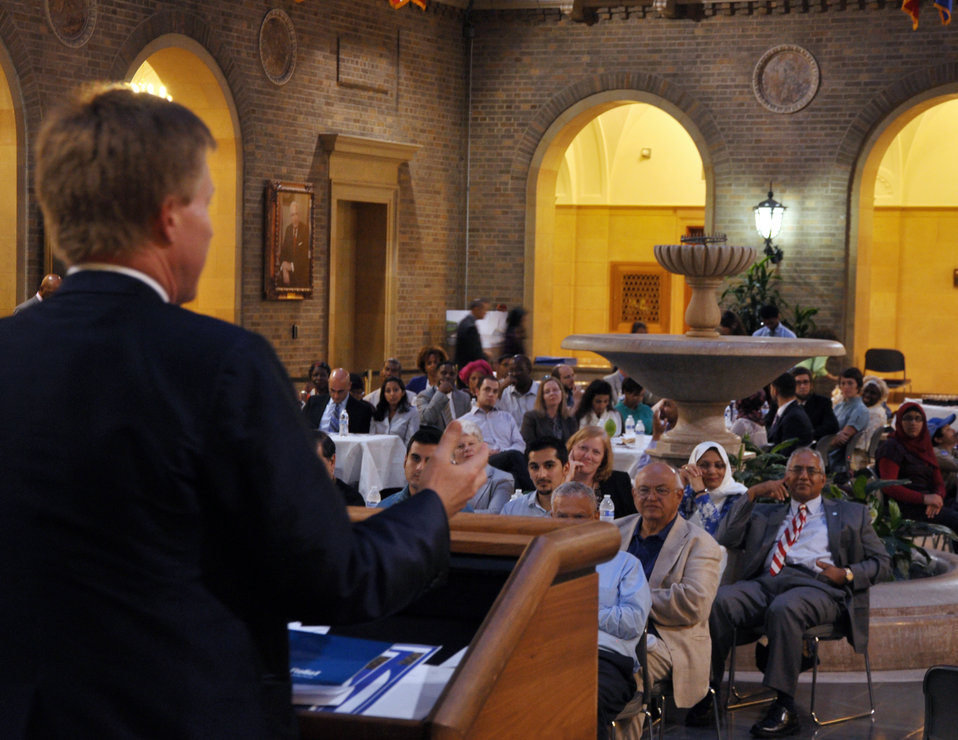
U.S. Department of Agriculture (USDA) StrikeForce Initiative Director Max Finberg emcees the USDA;s fifth annual Ramadan dinner on the USDA Whitten Building patio on Thursday, Aug. 1, 2013. For the second year in a row, Islamic Relief USA had the privilege of sponsoring the event’s dinner. Islamic Relief USA works with the USDA as well as numerous other organizations to help alleviate hunger. In one joint initiative with the USDA, IRUSA helps support community organizations across America that provide summer meals to low-income youth who rely on free or reduced-cost school lunches during the school year.